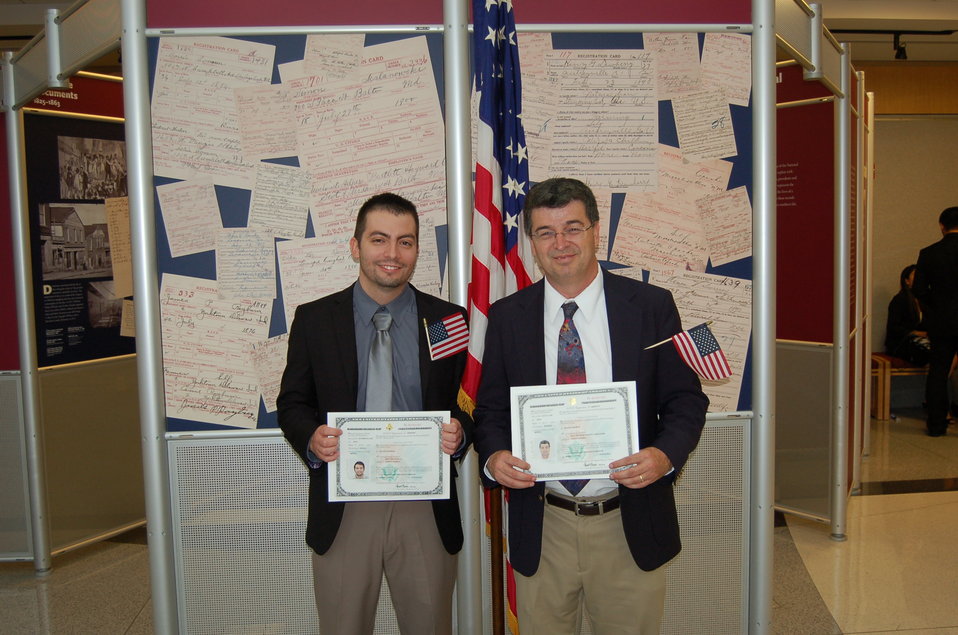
New Citizens